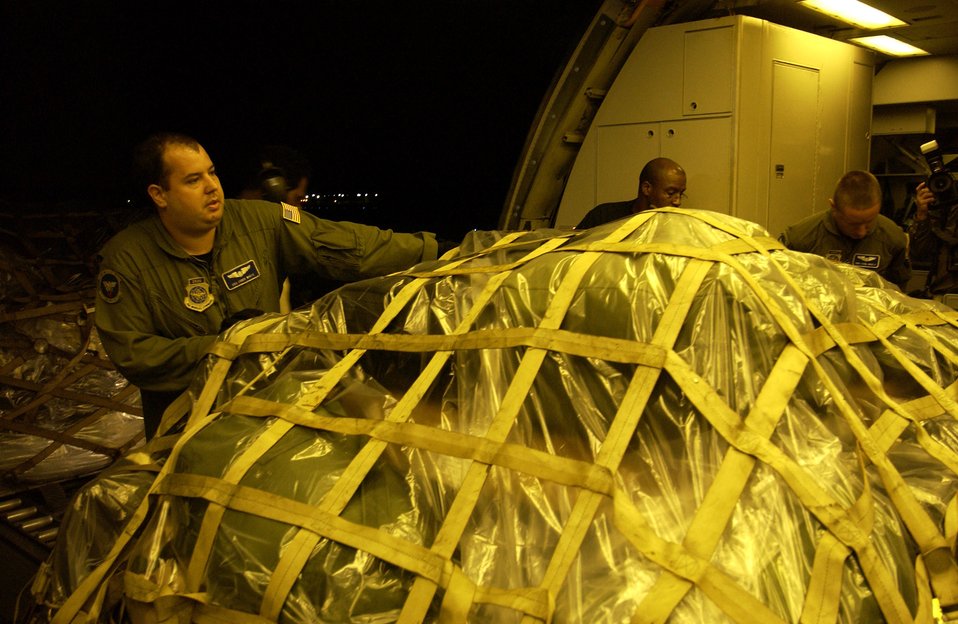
Pakistan Earthquake Relief

LANGLEY AIR FORCE BASE, Va. -- An Airman loads a KC-10 Extender with relief supplies here Oct. 11. The Air Force is delivering disaster relief supplies and services as part of a multinational effort to provide aid and support to Pakistan and parts of India and Afghanistan following a devastating earthquake. The KC-10 is from McGuire Air Force Base, N.J.